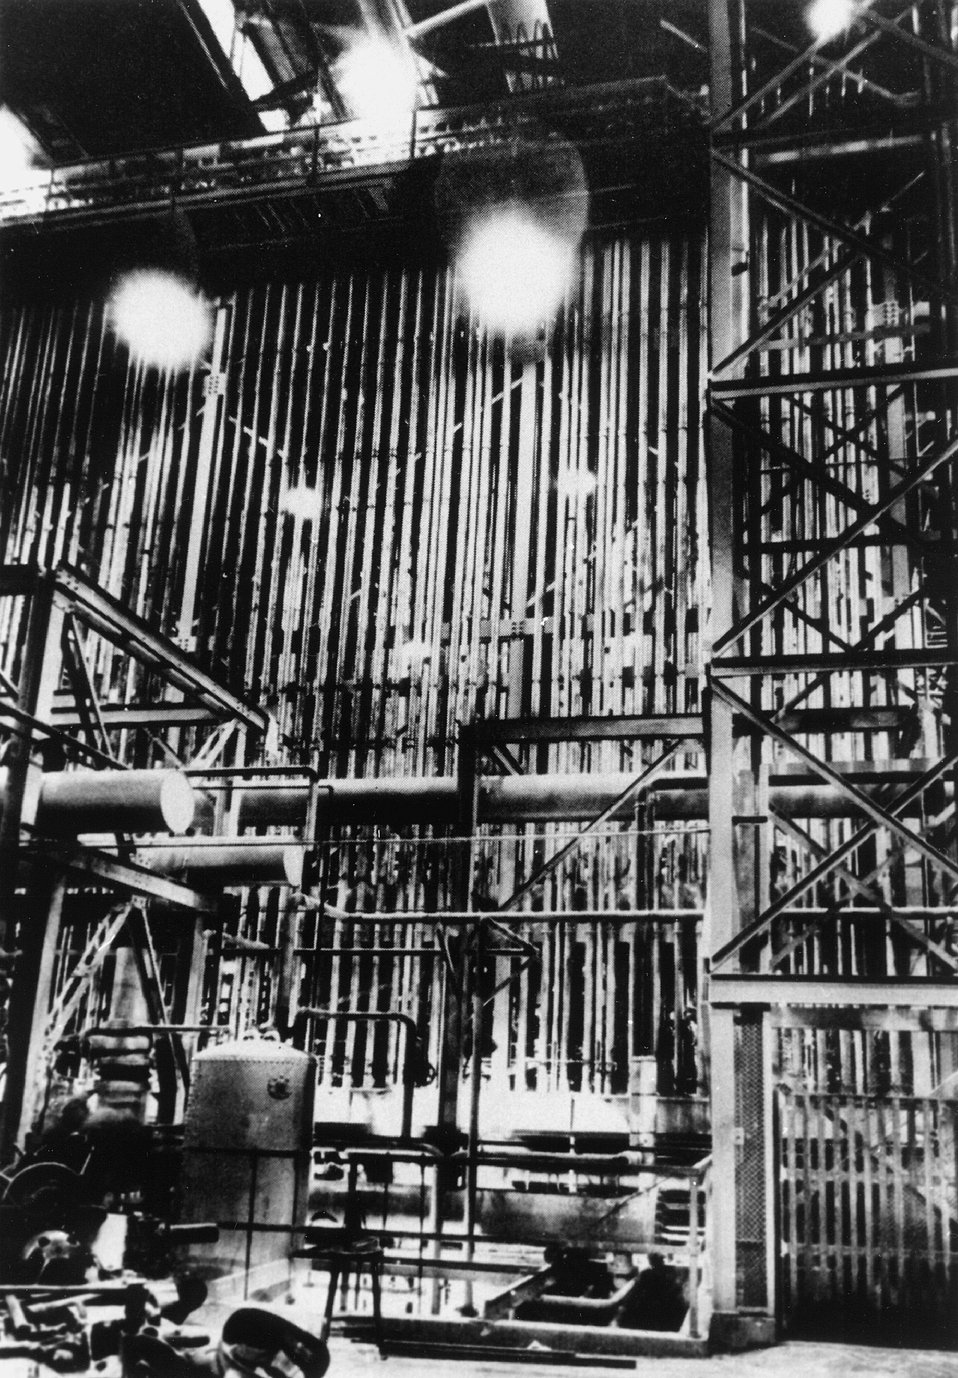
Section of S-50 Liquid Thermal Diffusion Plant at Clinton. c. undated